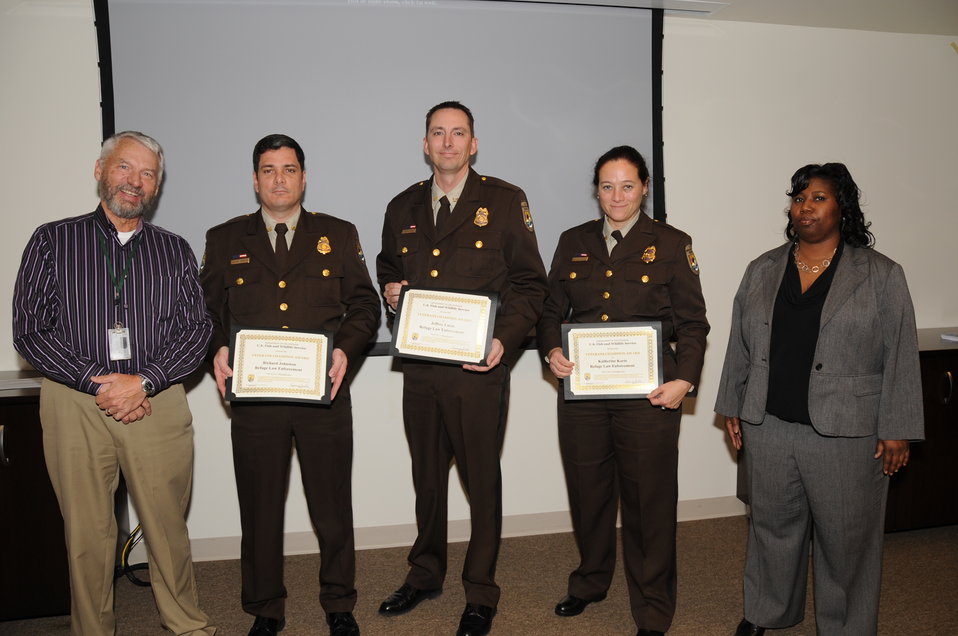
Honoring and Celebrating our Veterans

11.07.2012 Employees gathered in the Arlington Office to honor FWS Veterans